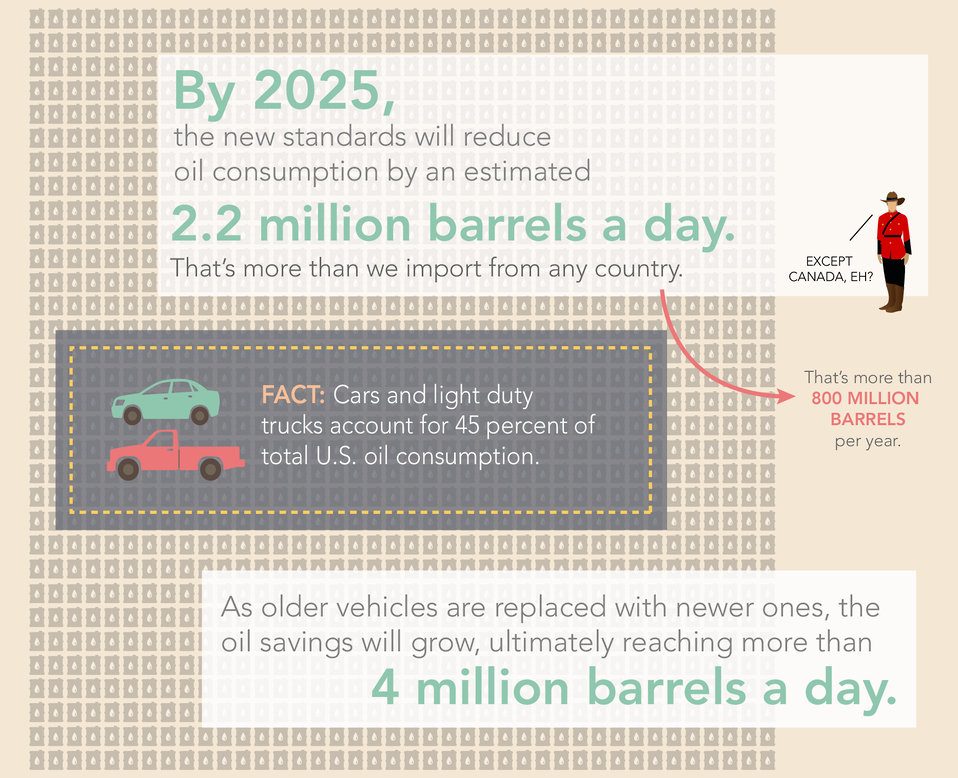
Infographic: The Road to Fuel Efficiency

Slide 3